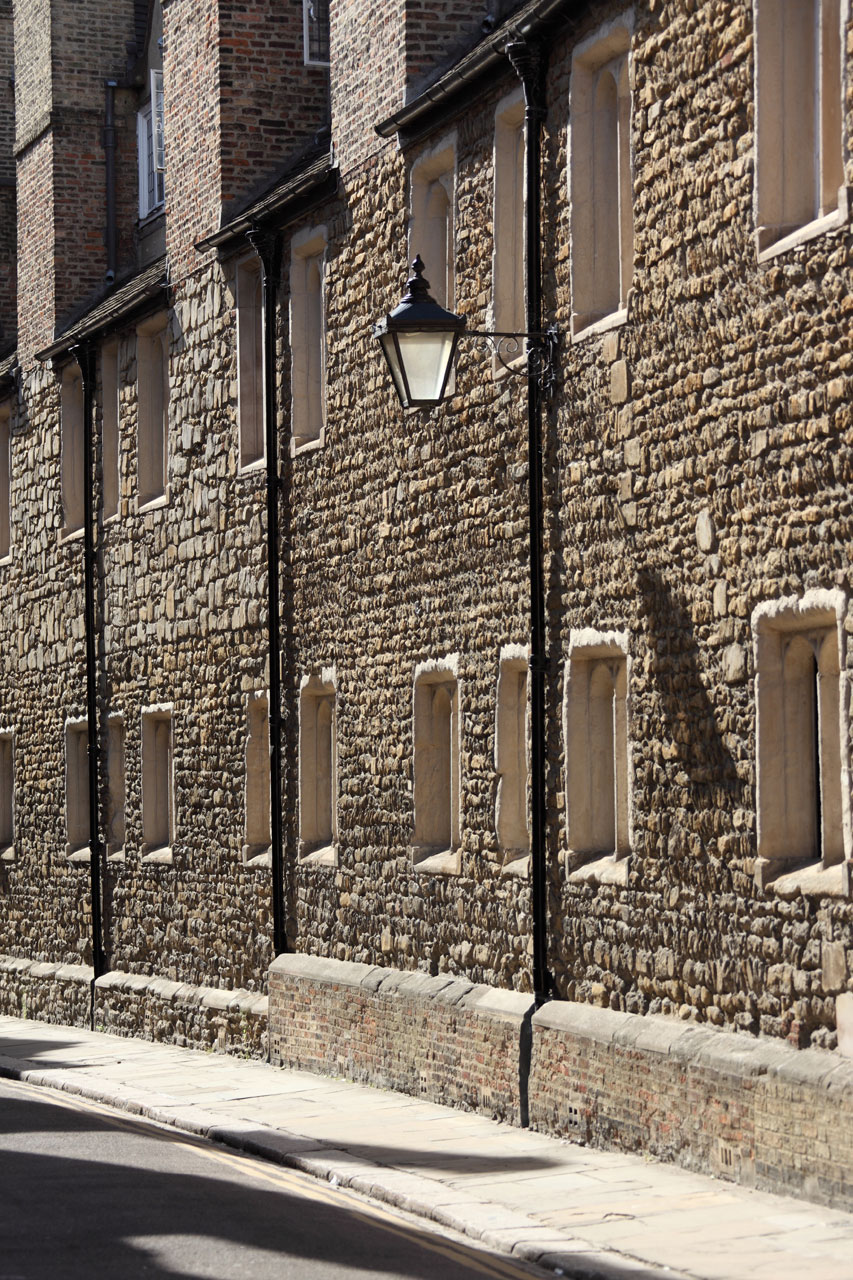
Street lamp on the street of cambridge.